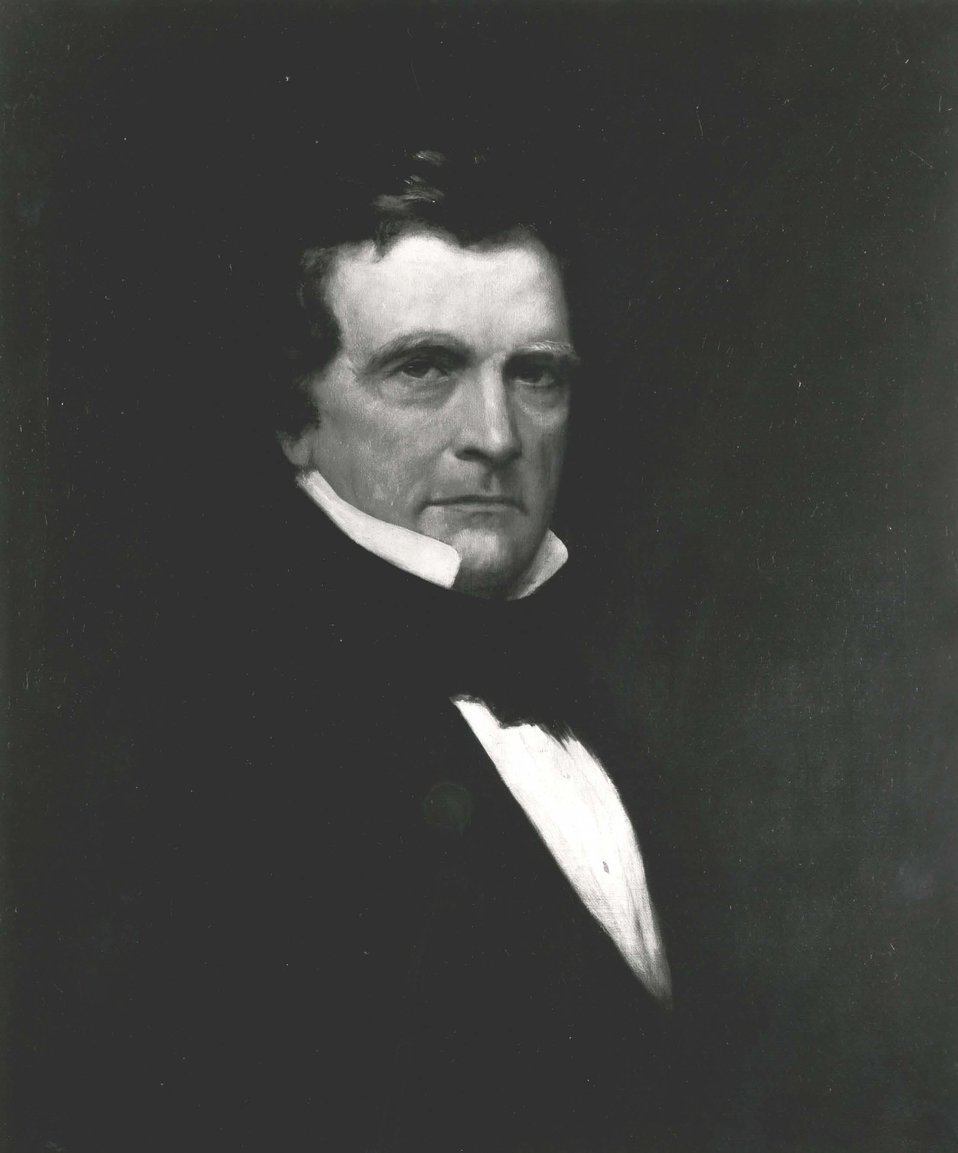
William L. Marcy, U.S. Secretary of State, March 8, 1853 to March 6, 1857